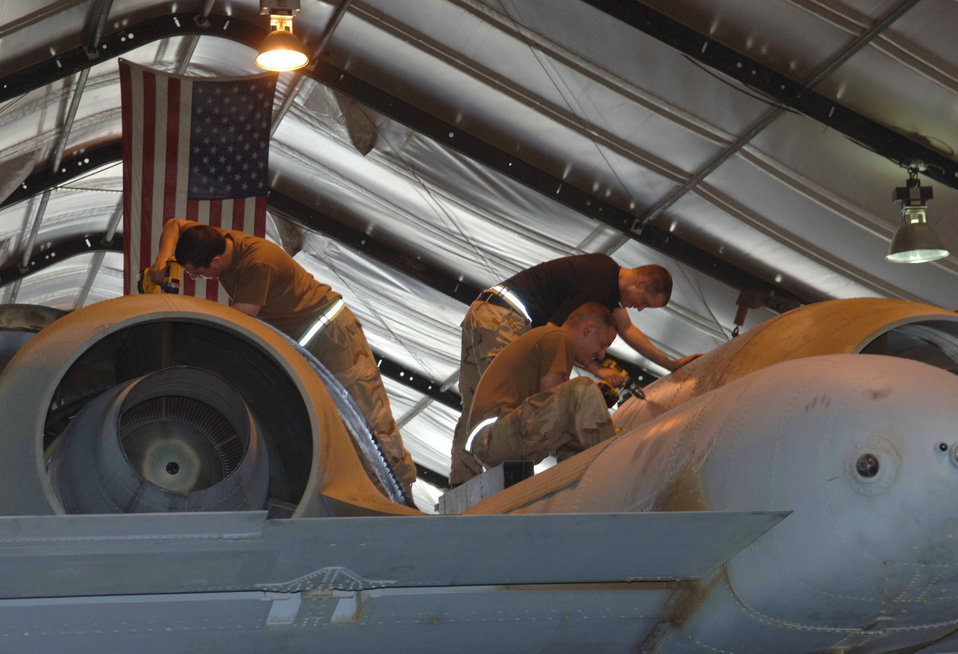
Workin' it

BAGRAM AIR BASE, Afghanistan -- (From left) Airmen 1st Class Benjamin McIntosh, Charles Swiney and Anthony Meola perform phase maintenance on an A-10 Thunderbolt II here. They are assigned to the 455th Expeditionary Maintenance Group and are deployed from Pope Air Force Base, N.C.